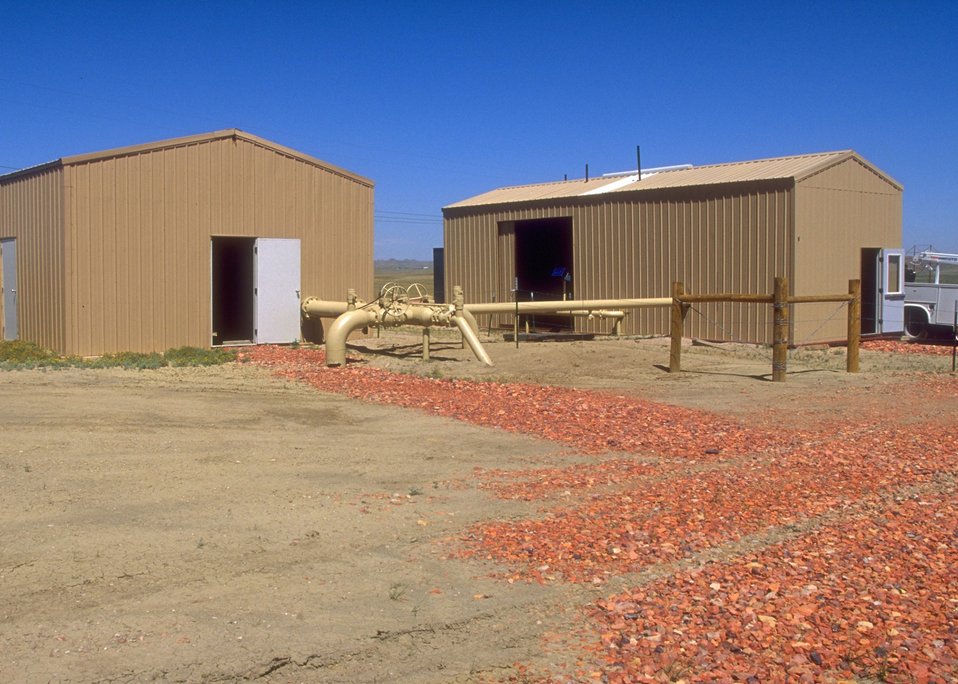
Facilities used in the production of coal bed methane, Buffalo Field Office.